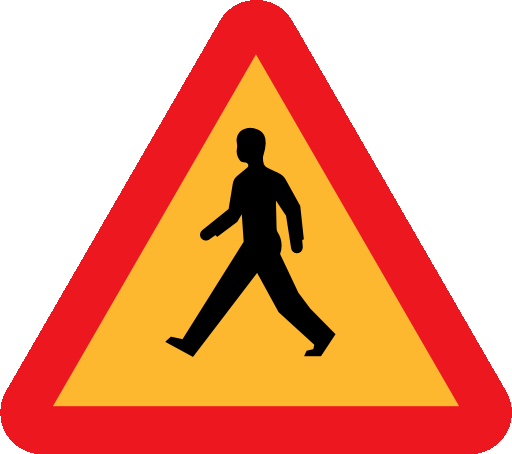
1 1 40b